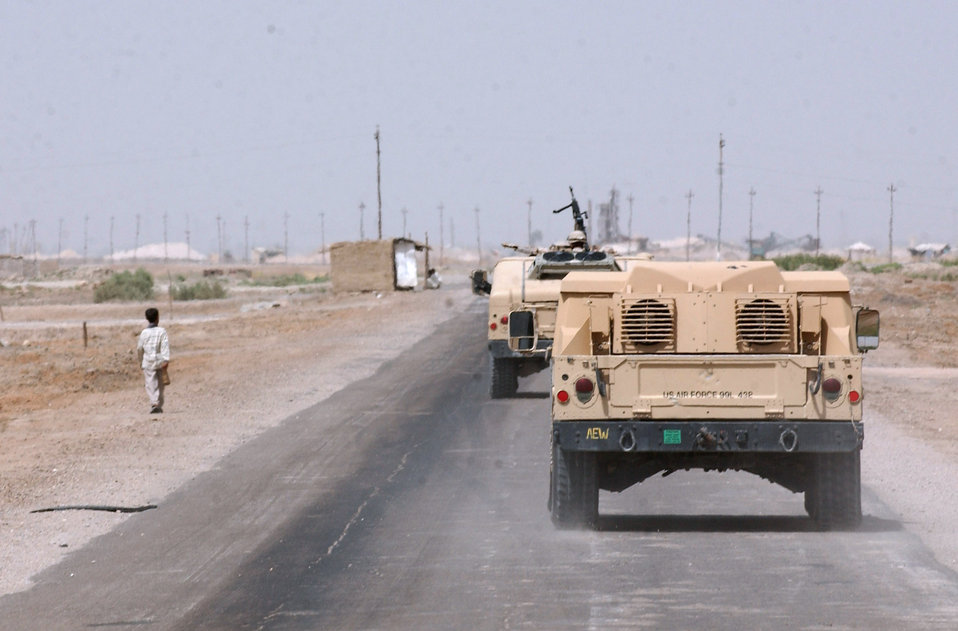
Security forces Airmen establish early warning network with locals

IRAQ -- Humvees from the 407th Expeditionary Security Forces Squadron at nearby Tallil Air Base patrol in the desert. The squadron's Airmen provide perimeter security to Tallil, and part of their job is to drive about 210 square miles that surrounds the installation to keep U.S. servicemembers and coalition forces safe.